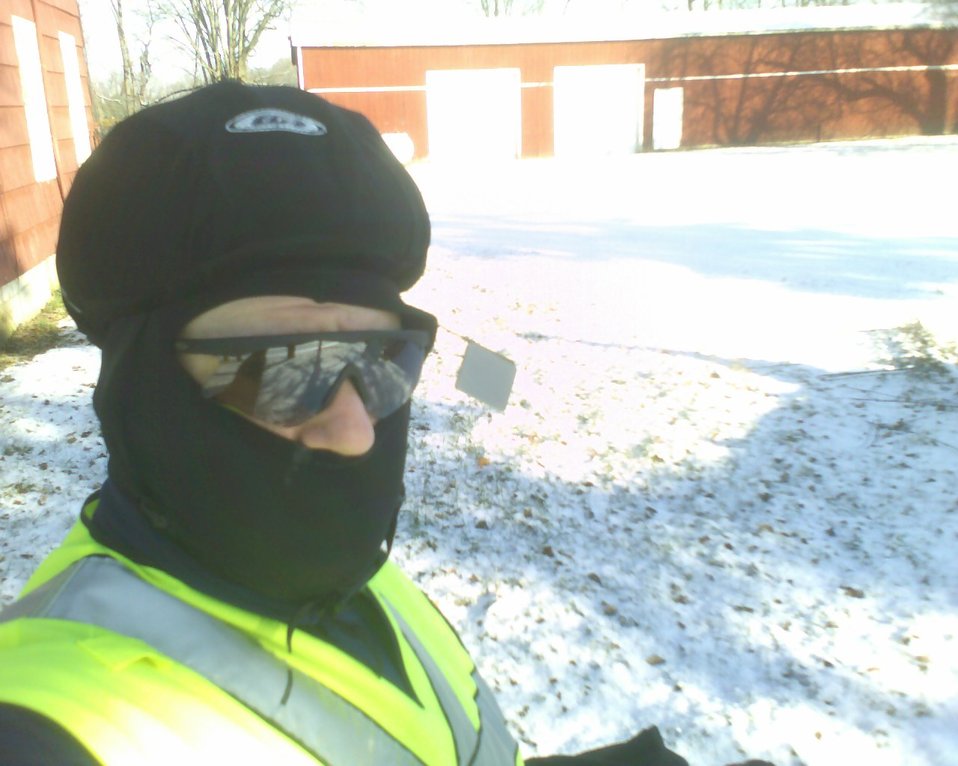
A picture of myself dressed for a winter bicycle ride.